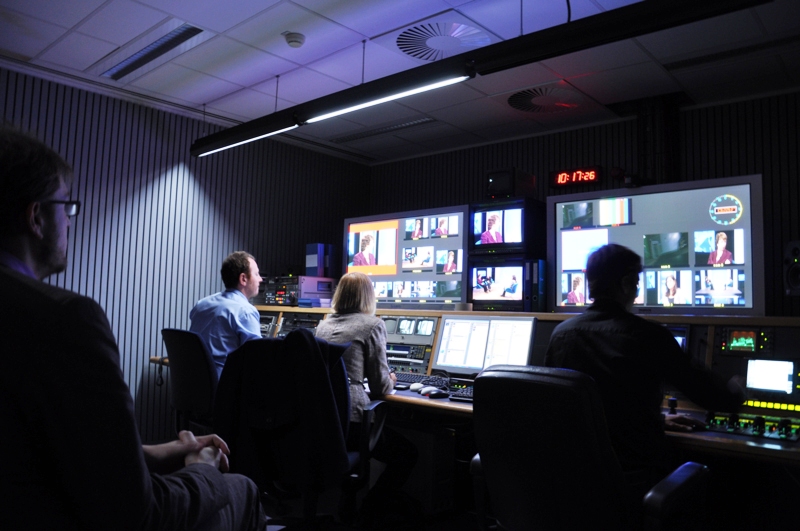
Behind the Scenes: Secretary Clinton and EU High Representative Ashton Participate in a Joint BBC Interview

Behind the Scenes: U.S. Secretary of State Hillary Rodham Clinton and EU High Representative Catherine Ashton participate in a joint BBC interview in Brussels, October 14, 2010.